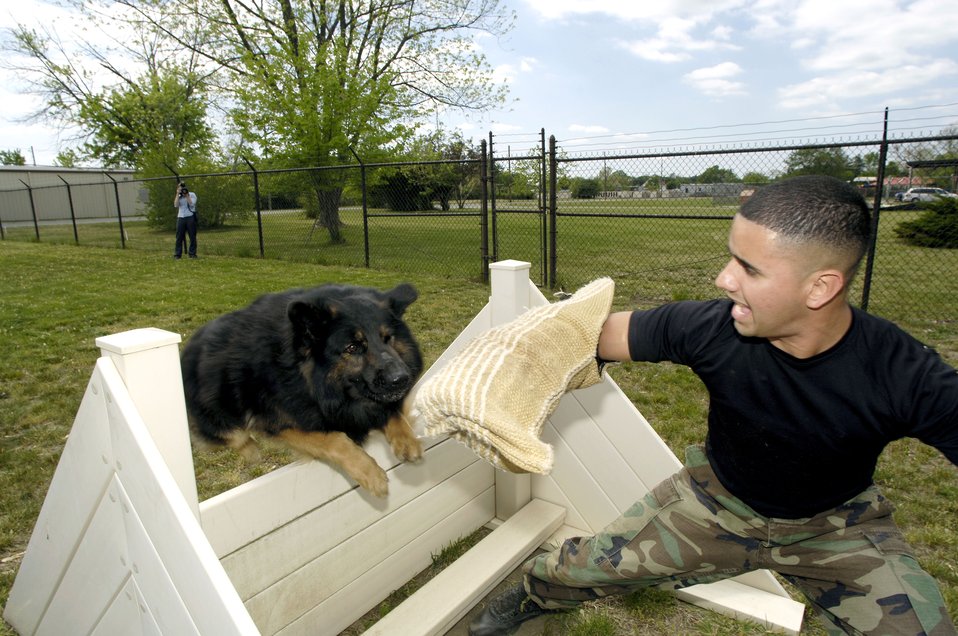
Military working dog trains hard

Cezar